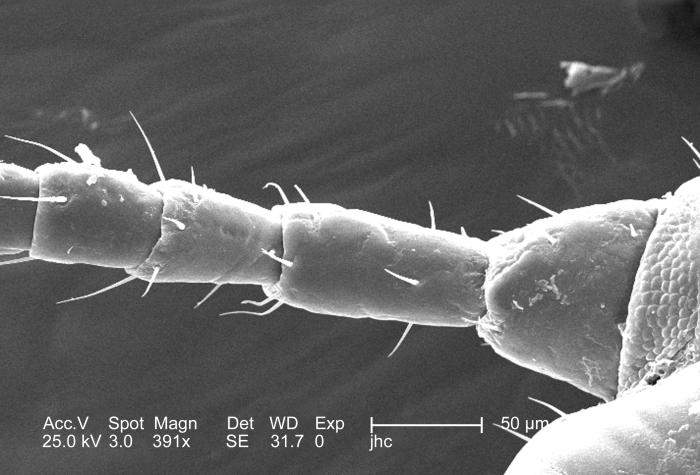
At a moderate magnification of 391x, this 2006 scanning electron micrograph (SEM) depicted an enlarged dorsal view at the proximal end of the right antenna of a male body louse, Pediculus humanus var. corporis. The antennae are composed of three main regions: scape, pedicle, and flagellum. The scape attaches the sensory organ to the head region, and the pedicle joins the distal, jointed flagellum to the scape. The bilaterally situated antennae are not the only structures in the insect's repertoire of sensorial apparatuses that provide it with information of changes in its environment. In fact, the 'hairs' dispersed over its exoskeletal surface, are also used as integral sensorial instruments, and are known as "setae', evident on this antenna in this SEM.